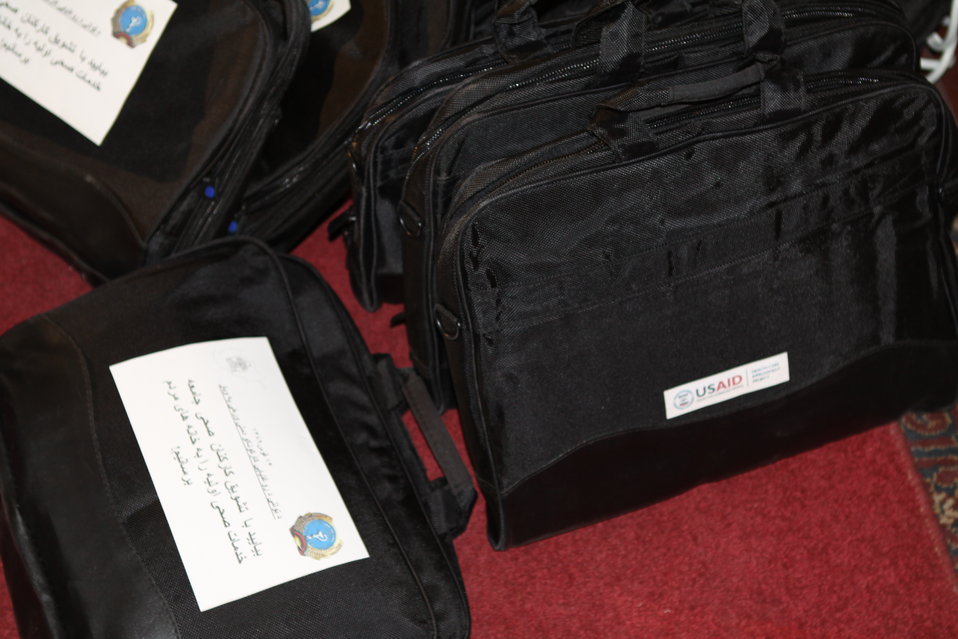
Community Health Workers Celebrated

Kabul, Afghanistan | December 5, 2010 — In support of the United Nations designated International Volunteer Day for Economic and Social Development, Afghanistan’s Ministry of Public Health celebrated its annual Community Health Worker Day today. Acting Minister of Public Health Dr. Suraya Dalil, USAID Senior Deputy Mission Director Robert Hellyer, other government officials, and international donors joined in recognizing the critical contribution of community health workers in Afghanistan and encouraging them to continue their voluntary support to their communities.
The event praised the contributions of the more than 22,000 volunteers throughout the country who deliver community level health-education, counseling, and services out of village health posts located in private homes. The Ministry of Public Health envisioned that community-based healthcare programs will actively encourage communities and families to adopt healthy lifestyles and behaviors, and provide families access to high quality and socially acceptable preventative medicine and life-saving services.
“We have 22,000 community health workers in Afghanistan that are able to implement the basic and standard medicines. They all have been trained through a job description,” said Minister Dalil. Addressing the health workers, she added, “I am proud and feel powerful that I have people like you.”
USAID-funded health projects collaborate closely with the Ministry of Public Health to improve the health and nutritional status of Afghans, provide quality primary healthcare, and promote healthy behaviors at the community and household-levels. USAID supported the training of more than 9,000 of the volunteer community health workers currently working in Afghanistan.
“On behalf of the American people, I congratulate the Community Health Workers for their diligence to gain the skills and knowledge necessary to serve their communities in this important role,” said USAID Senior Deputy Mission Director Hellyer. “USAID strongly supports community based health care and believes that quality community-based health services are essential to reaching Afghanistan’s Millennium Development Goals.”
To support the Basic Package of Health Services, USAID assisted in developing the community health worker training manual, helped train community health worker supervisors and master-trainers, facilitated in-service training, and produced and developed reporting tools, job aids, and education materials.